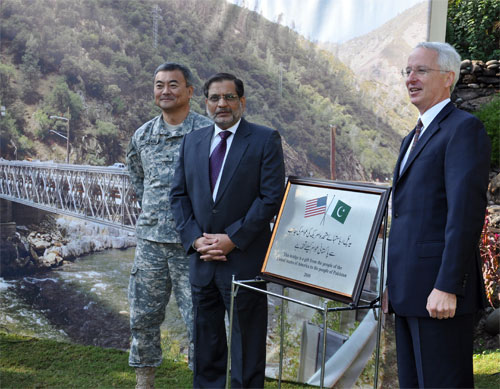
U.S.-Provided Bridges to Assist Flood Recovery in Khyber Pakhtunkhwa

December 1, 2010 - U.S. Ambassador Cameron Munter, Deputy Commander, Office of the Defense Representative-Pakistan Brigadier General Michael Nagata and National Disaster Management Authority Chairman Lt. Gen. ® Nadeem Ahmed participate in a bridge handover ceremony.